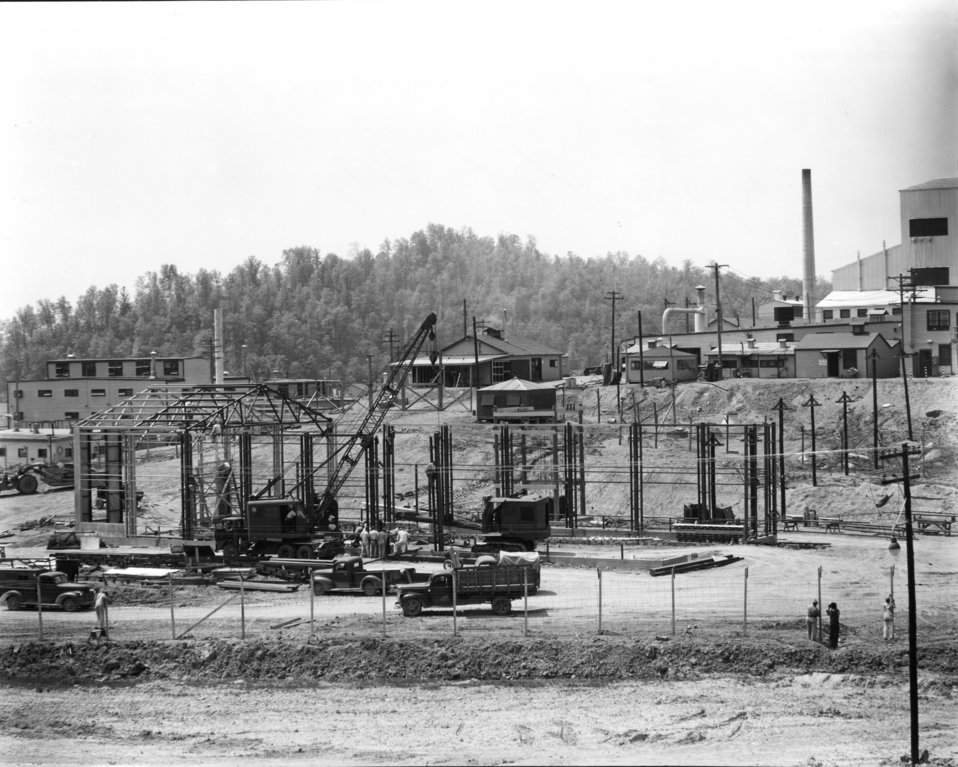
X-10 at Oak Ridge